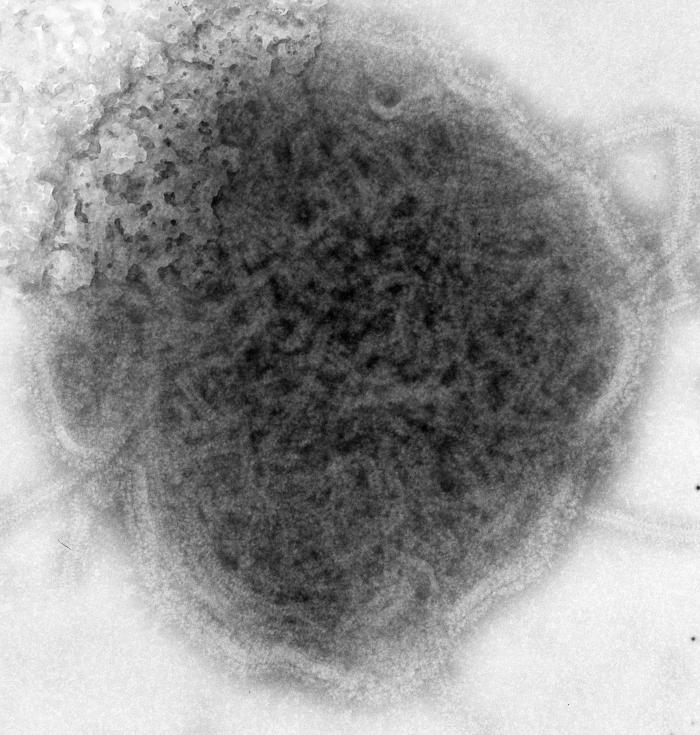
This 1973 negative stained transmission electron micrograph (TEM) depicted the ultrastructural features displayed by the mumps virus.